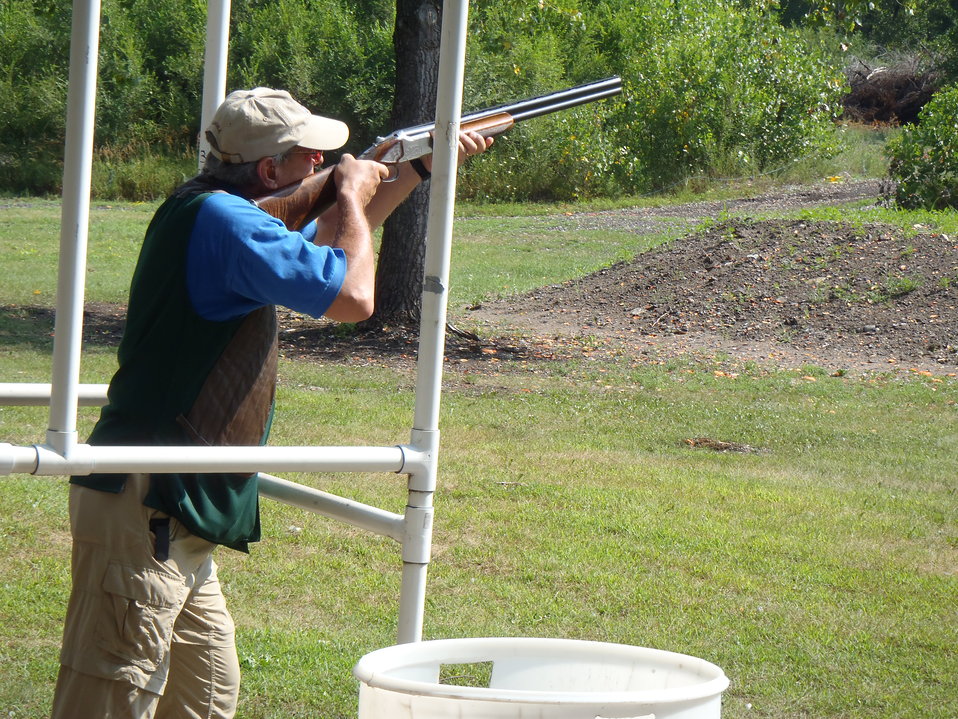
Regional Director Tom Melius takes aim.